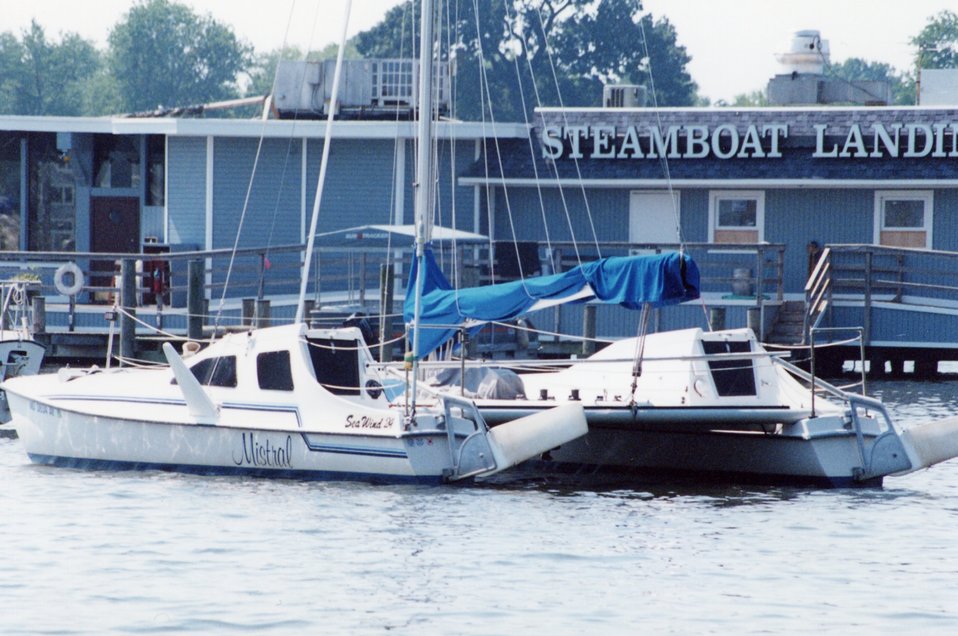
Riverside restaurant and catamaran sailboat.